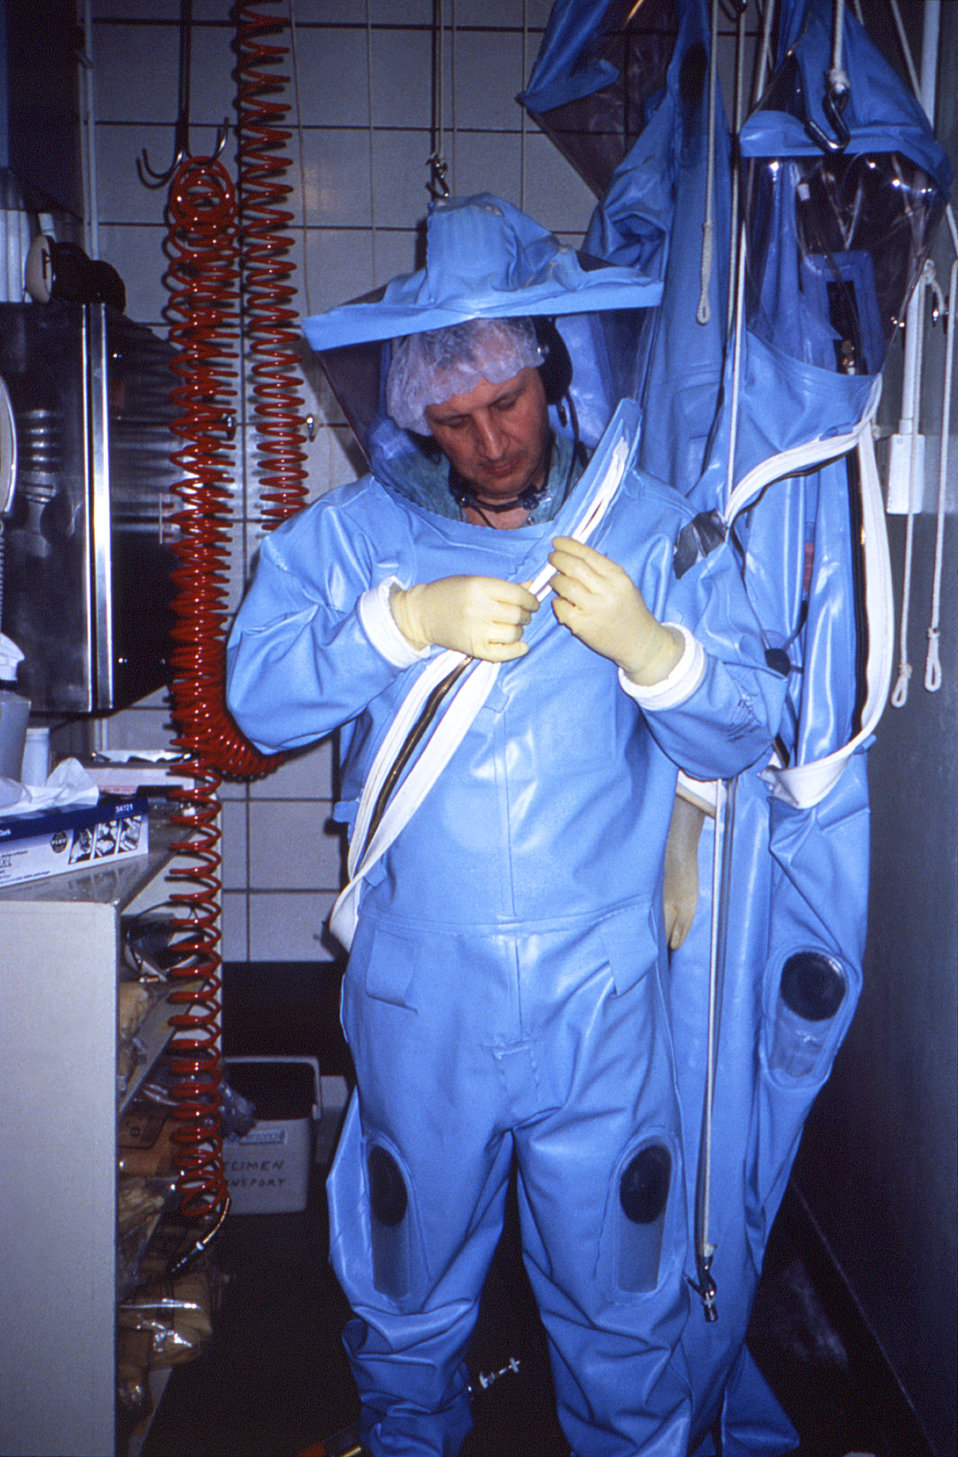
This photograph depicted a Centers for Disease Control (CDC) laboratorian, as he was putting on an older-model positive-pressure suit before entering one of the CDC's earlier maximum containment, or Biosafety Laboratories (BSL), sometimes referred to as a 'suit lab'.